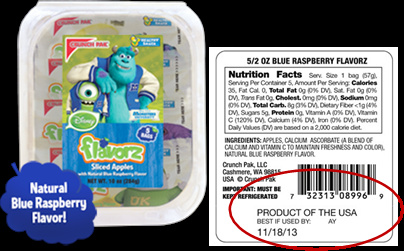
RECALLED – Apple slices

November 14, 2013 – Product Recall – Crunch Pak Issues Voluntary Recall of Limited Quantities of Crunch Pak Brand Apple Slices Because of Possible Health Risk.